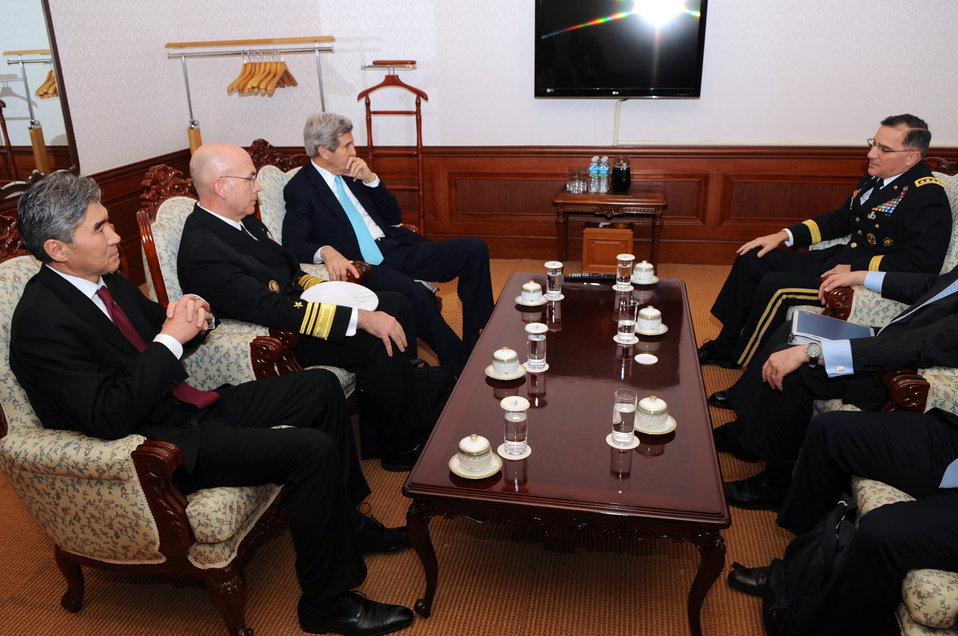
Secretary Kerry Meets With U.S. Forces Korea Commander Scaparrotti in Seoul, South Korea

U.S. Secretary of State John Kerry, flanked by Vice Admiral Kurt Tidd and U.S. Ambassador to the Republic of Korea Sung Kim, chats with Army General Curtis Scaparrotti, commander of U.S. Forces Korea and U.N. Command, before a meeting with South Korean President Park Geun-hye at Blue House in Seoul, South Korea on February 13, 2014.